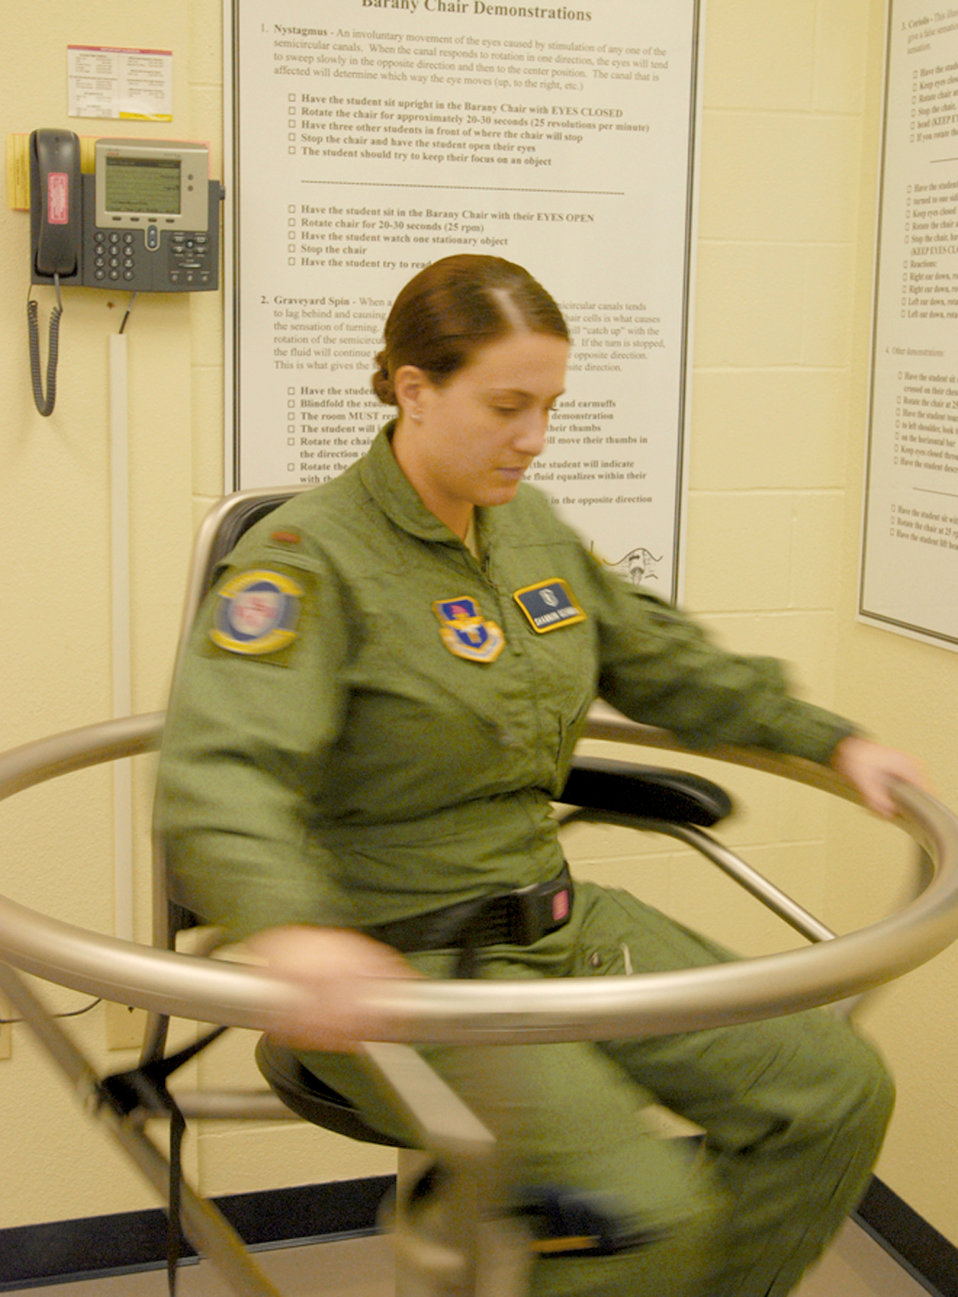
Overcoming airsickness PB

2nd Lt. Shannon Scannon spins slowly in a Barany chair used to help prevent air sickness. Lieutenant Scannon is a physiologist with the 359th Aerospace Medical Squadron